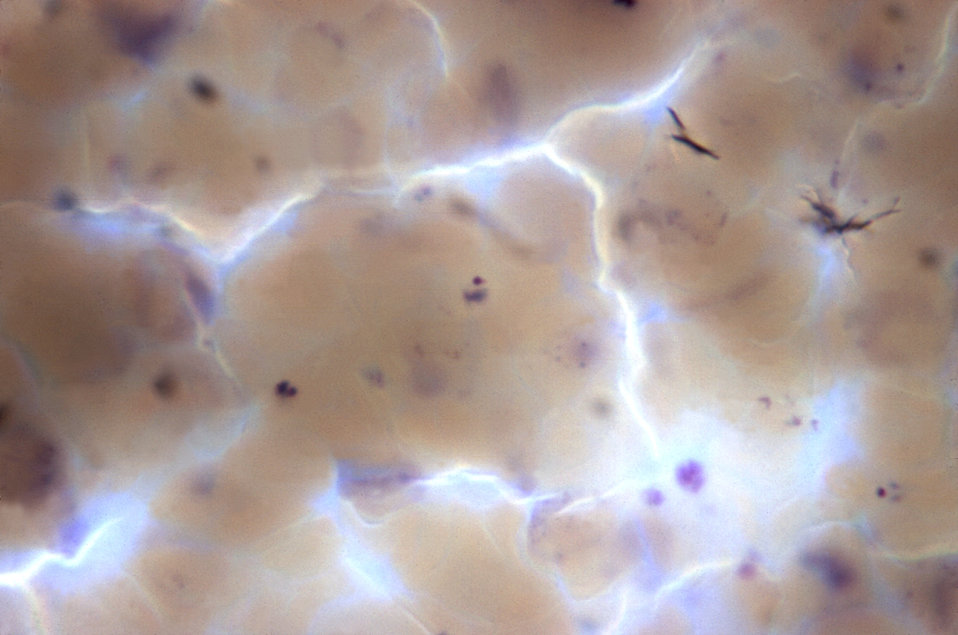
This micrograph depicts the appearance of a thick film having undergone 'partial' fixation, producing an unfavorable result.